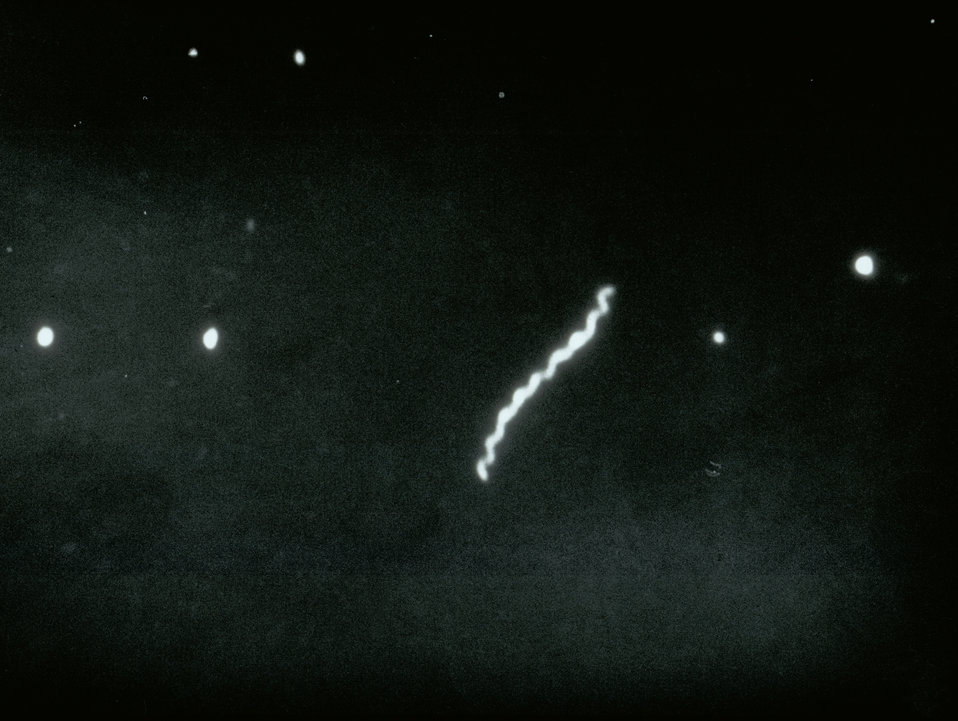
Photomicrograph of a Treponema pallidum bacterium using darkfield microscopy technique. Mag 400x